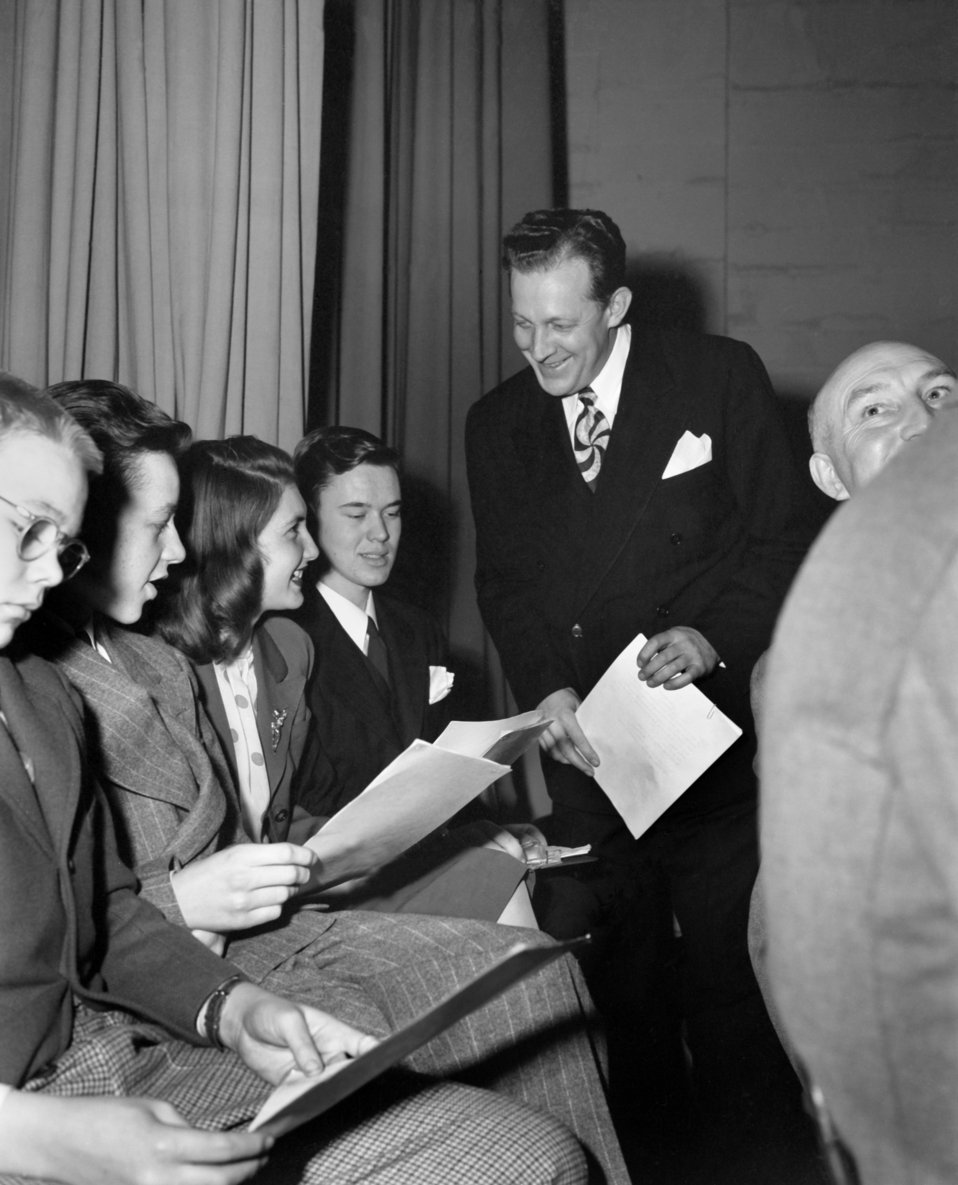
Radio Broadcast 'We the People' Oak Ridge 1947

3287-5b DOE photo Ed Westcott 2-9-1947 Oak Ridge Tennessee